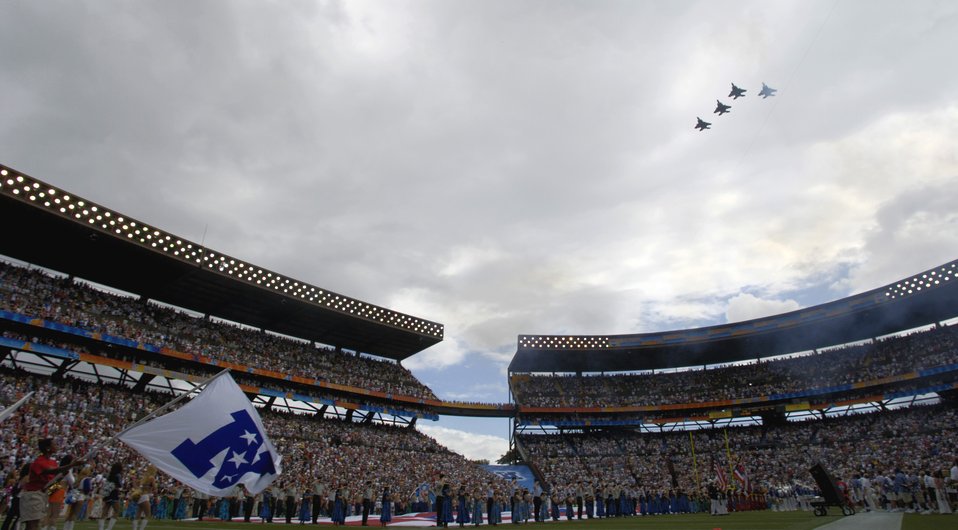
Pro Bowl honors

ALOHA STADIUM, Hawaii (AFPN) -- F-15 Eagles from the 199th Fighter Squadron, Hawaii Air National Guard, fly over the stadium during the opening ceremony Feb. 12 of the 2006 Pro Bowl football game here.